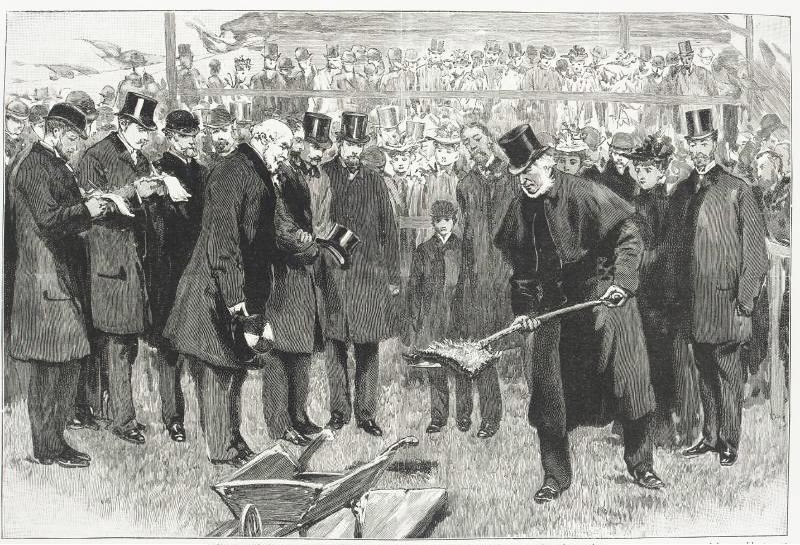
The first sod of the Wirral Railway was cut by William Gladstone using a silver-mounted spade. The proceedings were opened by Sir Edward Watkin.